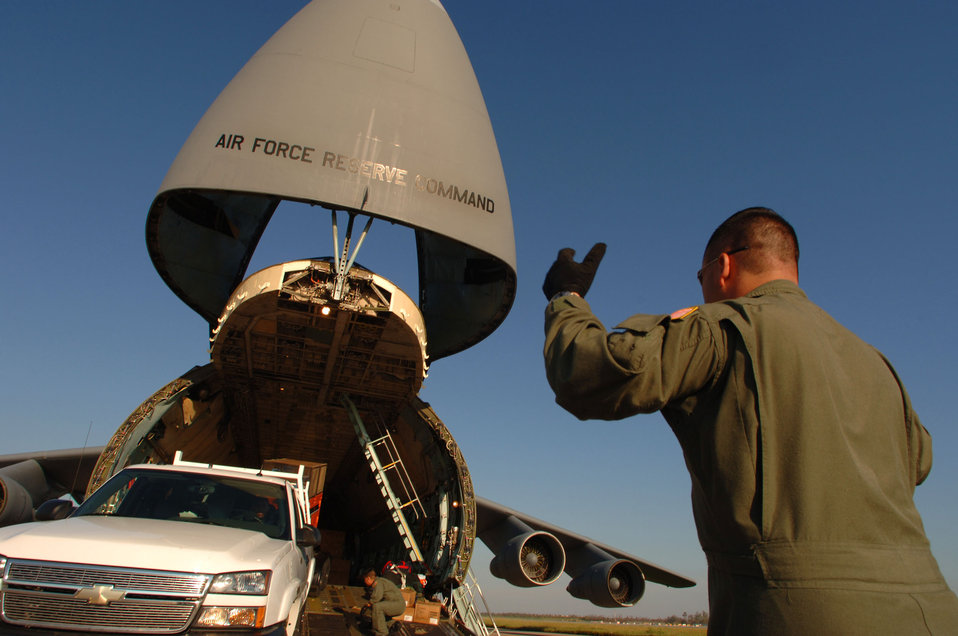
Support equipment

LOUIS ARMSTRONG NEW ORLEANS INTERNATIONAL AIRPORT, La. -- Tech. Sgt. Arthur Reyes offloads support equipment for fire and rescue personnel from a C-5 Galaxy here Sept. 8. Department of Defense units have mobilized as part of Joint Task Force-Katrina to support the Federal Emergency Management Agency's disaster relief efforts on the Gulf Coast. Sergeant Reyes is assigned to the 68th Airlift Squadron at Lackland Air Force Base, Texas